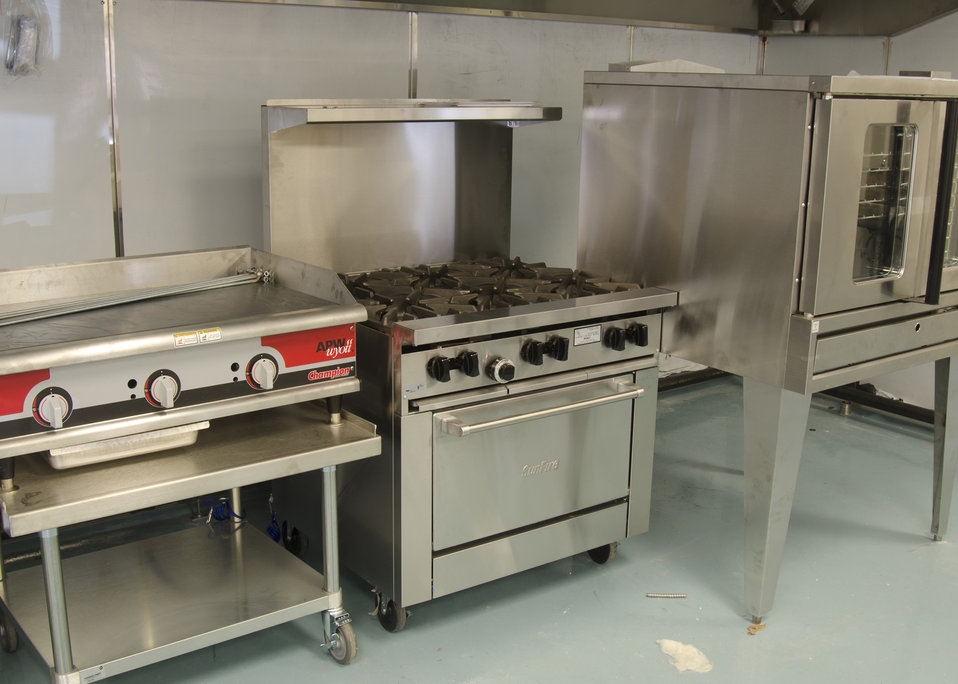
YorKitchen is a shared incubator kitchen that received partial funding through the U. S. Department of Agriculture’s (USDA) Rural Development (RD) Rural Business Enterprise Grant (RBEG) program. This program provides grants for rural projects that finance and facilitate development of small and emerging rural businesses, distance- learning networks, and employment related adult education programs. YorKitchen is a commercially equipped and fully licensed kitchen in which new entrepreneurs can prepare new products without the associated start up costs. This “incubator kitchen” provides full business support to include invoicing, accounting, advertising, outreach, and marketing for entrepreneurs. The YorKitchen is housed in the annex of Central Market in York, PA. This location offers local agricultural producers increased opportunities to develop new value-added products with their produce.